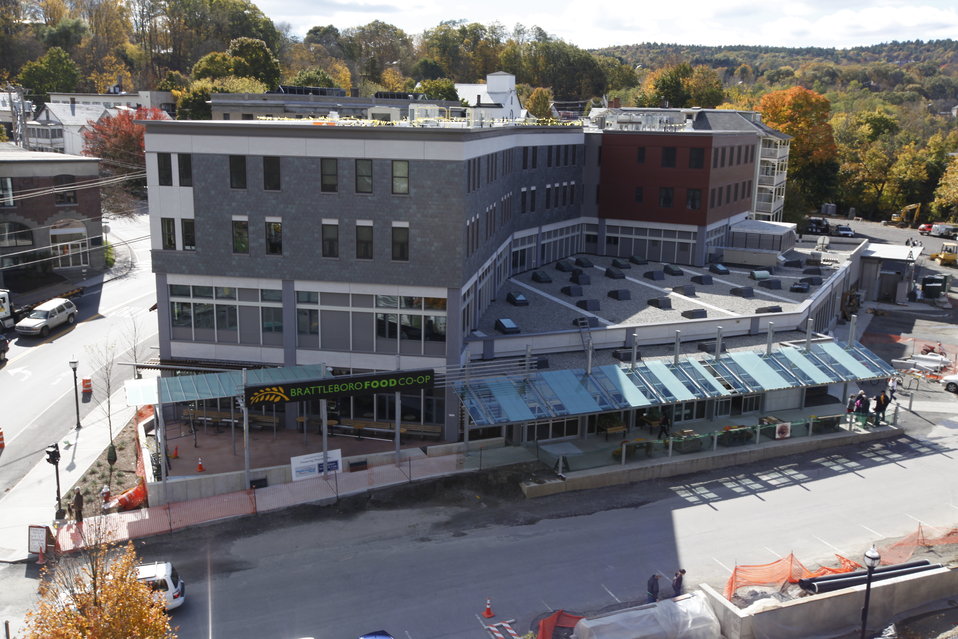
Brattleboro Vermont Coop

The Cooperative Building in Brattleboro, Vermont, won EPA’s 2012 Main Street or Corridor Smart Growth Achievement Award. The Co-op was redeveloped from a strip mall surrounded by parking lots into a pleasant commercial space with offices and affordable housing.